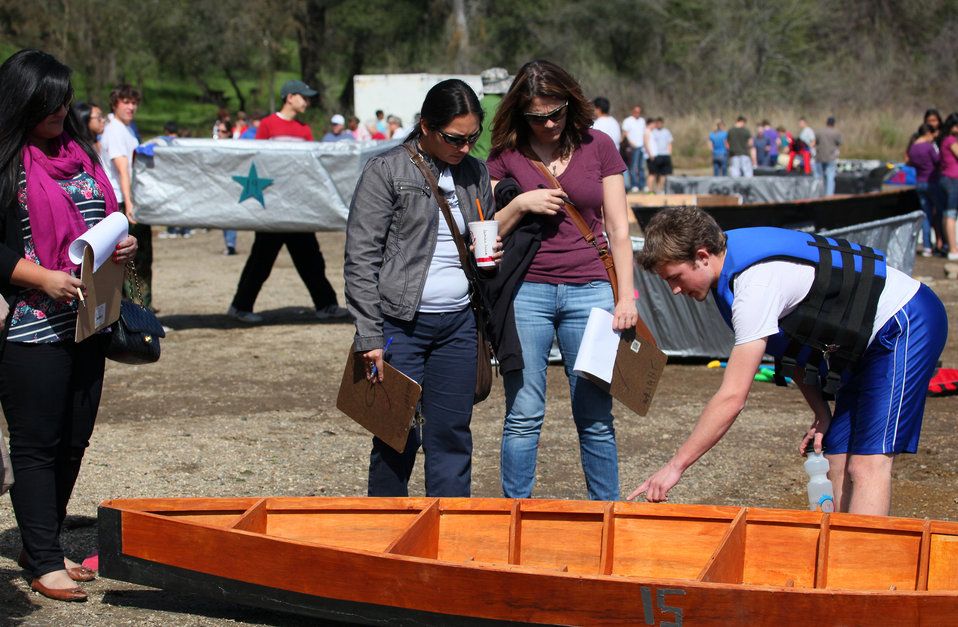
Judging boat regatta entrants for design and construction

(From left to right) Arianna Raymundo, Fiorella Fuentes and Zeffy Ruvalcaba of the U.S. Army Corps of Engineers Sacramento District examine a boat with a student at the 5th Annual Folsom High School Boat Regatta competition at Lake Natoma in Folsom, Calif., March 23, 2012. The three district employees helped judge boats designed and built by the students for their science class project. Following the on-shore judging, the boats were put to the test on the cold waters of Lake Natoma.